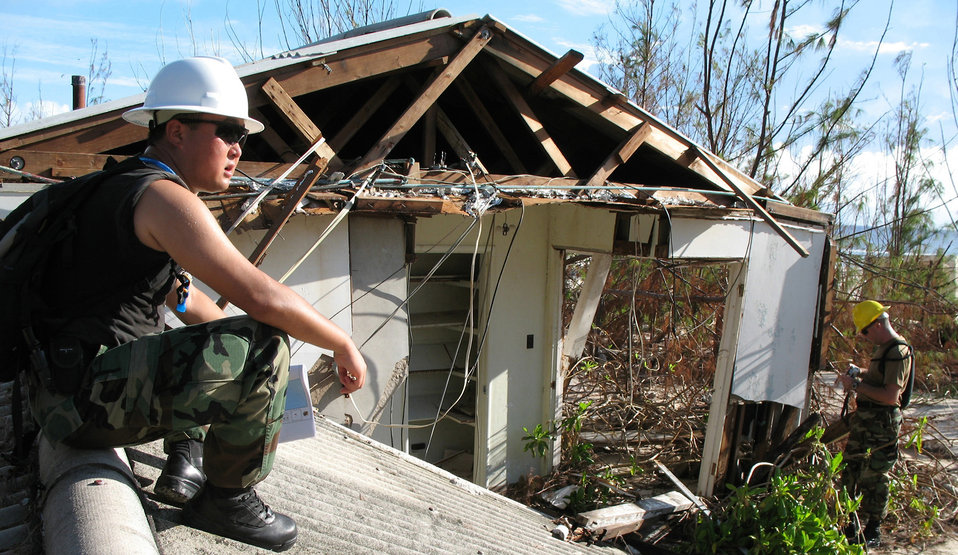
Airmen add up damage at Wake Island

Staff Sgt. Song Lee sits on a displaced roof while Tech. Sgt. Dennis Tye prepares to take a photo of the wreckage at Wake Island Sept. 15. Both Airmen work for the 15th Civil Engineer Squadron and were part of a damage assessment team sent to estimate the cost of damage left by Super Typhoon Ioke. The Category 5 storm blew across the atoll Aug. 31 with 155 mph winds and 190 mph gusts.